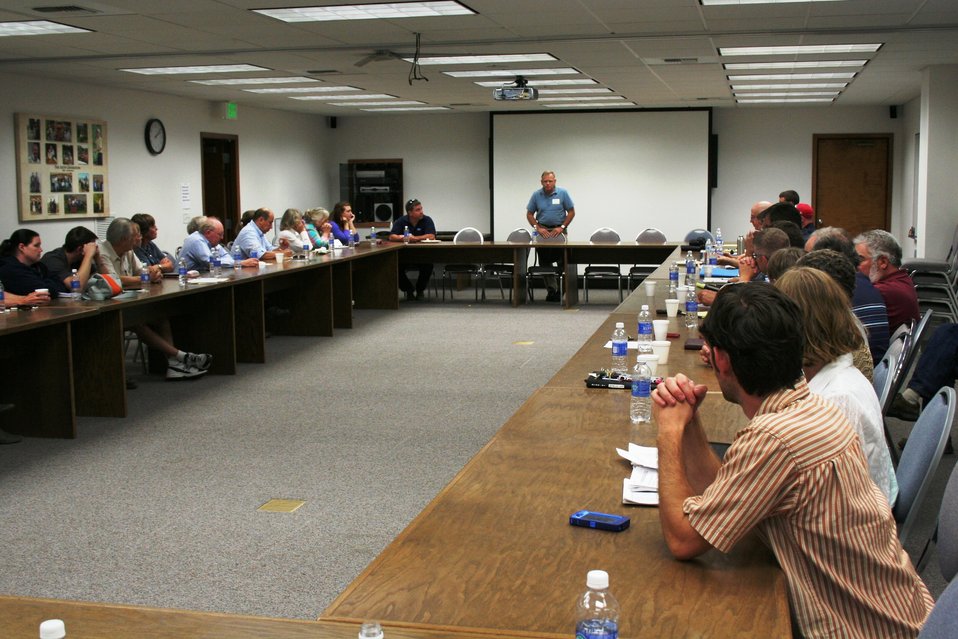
On the Road with Mike Taylor

FDA Deputy Commissioner Michael Taylor (left) and colleagues started a five-day tour of the Pacific Northwest on Sunday, Aug. 11, 2013 -- visiting Idaho, Oregon and Washington -- to get a first-hand look at produce production and irrigation operations, and to discuss the proposed Produce Safety Rule with growers, food industry representatives and state officials. Here Mike is chairing a produce safety meeting. For more about Mike's multi-region tour, read these FDA Voice blog posts:

• Hearing the Concerns of Maine Growers Striving for Agricultural Diversity
• On the Road with Mike Taylor: Touring the Pacific Northwest
• On the Road with Mike Taylor, Day 2: Frank Talk in Farm Country
• On the Road with Mike Taylor, Day 3: Families and Partnerships
• On the Road with Mike Taylor, Day 4: Looking to the Future